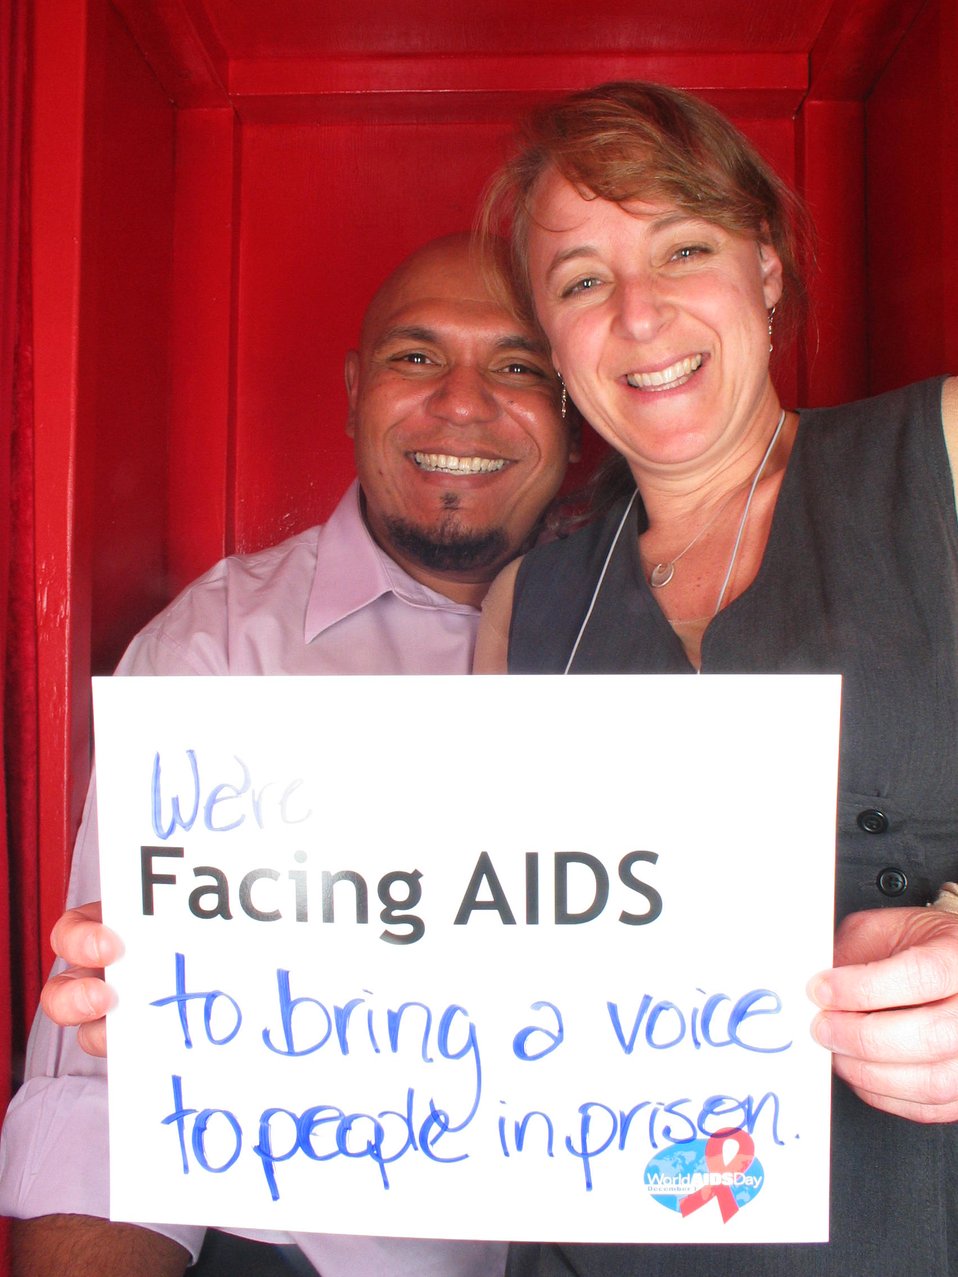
We're Facing AIDS to bring a voice to epople in prison.